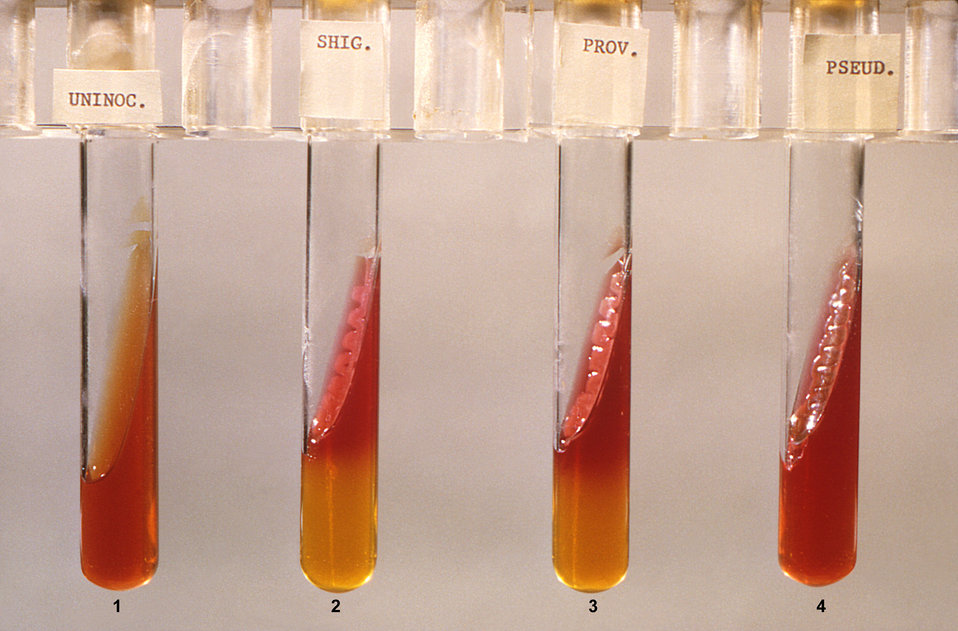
This image depicts four test tubes each containing triple sugar iron agar (TSI) medium. Test tube 1 only contained the agar medium, hence was uninoculated. Test tube 2, contained medium that was inoculated with Shigella sp. bacteria. Test tube 3 contained medium inoculated with Providencia sp. bacteria. Test tube 4 contained medium inoculated with Pseudomonas sp. bacteria.